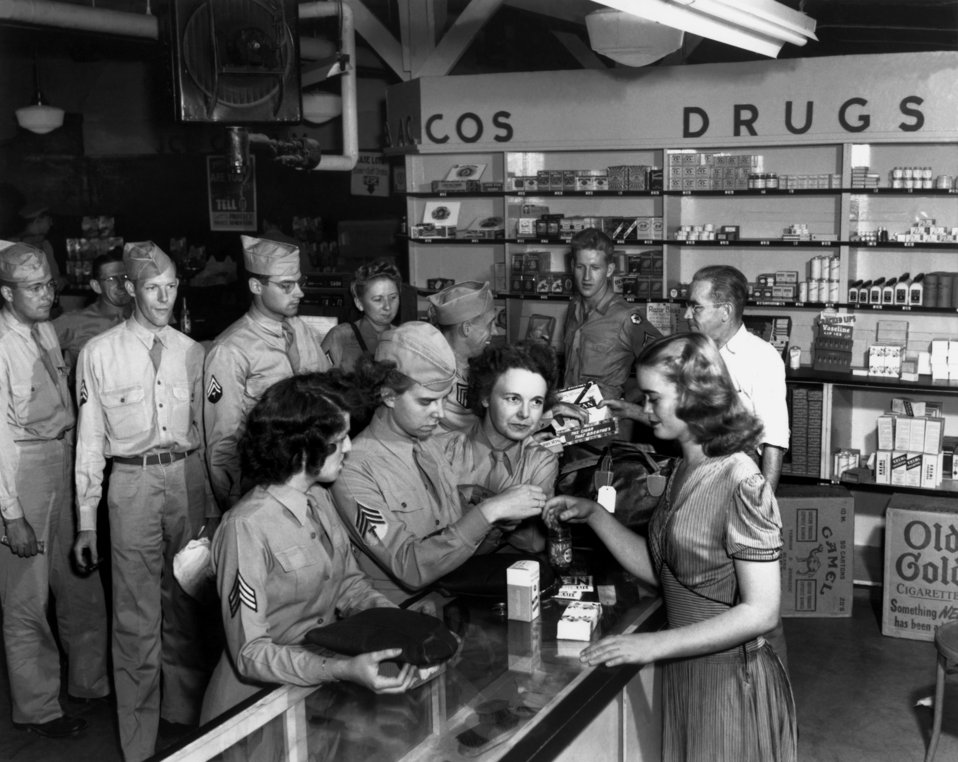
Army PX Oak Ridge

1657 DOE photo by Ed Westcott

Army PX Oak Ridge Tennessee 9-20-1945